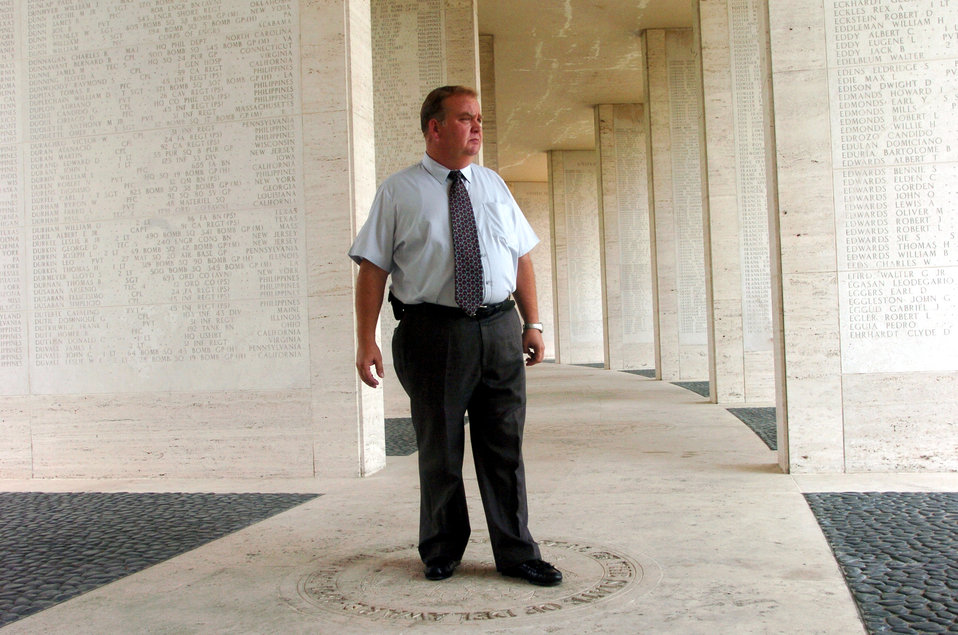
Living among fallen heroes

MANILA, Philippines -- Superintendent Dan Neese stands in a hall of the Wall of Missing at the Manila American Cemetery and Memorial here during his daily rounds. The cemetery is the final resting place for 17,206 Americans from World War II. A Wall of Missing is inscribed with 36,284 names.